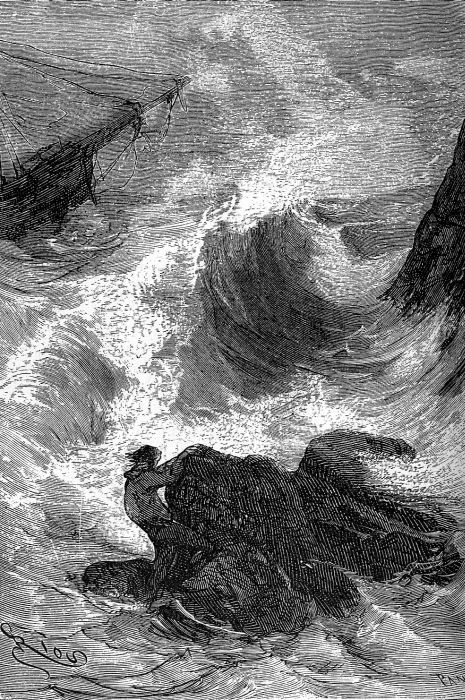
An ilustration from the novel 'In Search of the Castaways; or Captain Grant's Children' by Jules Verne drawn by √âdouard Riou. Polski: Ilustracja powie≈õci Juliusza Verne'a 'Dzieci kapitana Granta' autorstwa √âdouarda Riou. Fran√ßais†: 'Les Enfants du capitaine Grant', √âdouard Riou. Fran√ßais†: Bient√¥t le navire fit c√¥te.